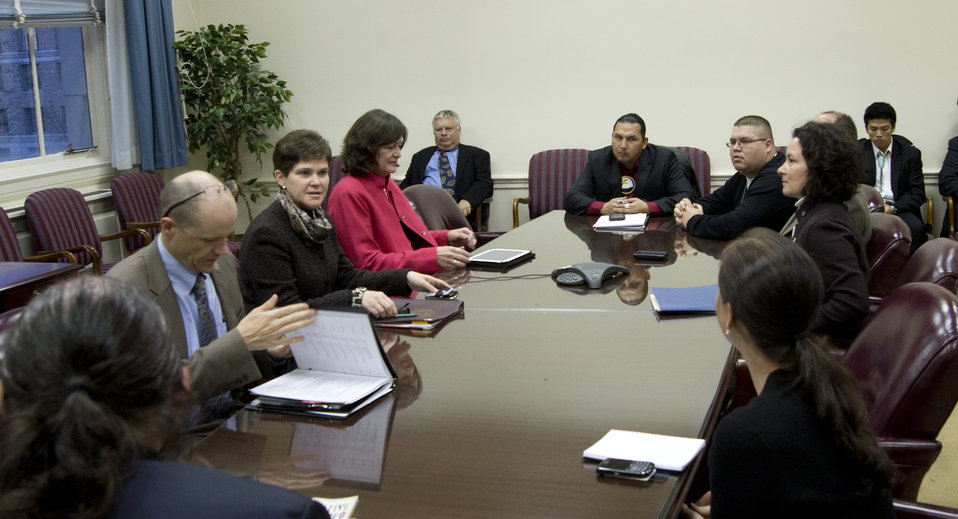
Agriculture Deputy Secretary Krysta Harden hosts a roundtable discussion on Agriculture, Community and Economic Development Opportunities in Indian Country with tribal leaders at the U.S. Department of Agriculture (USDA) in Washington, D.C. on Tuesday, Nov. 12, 2013.